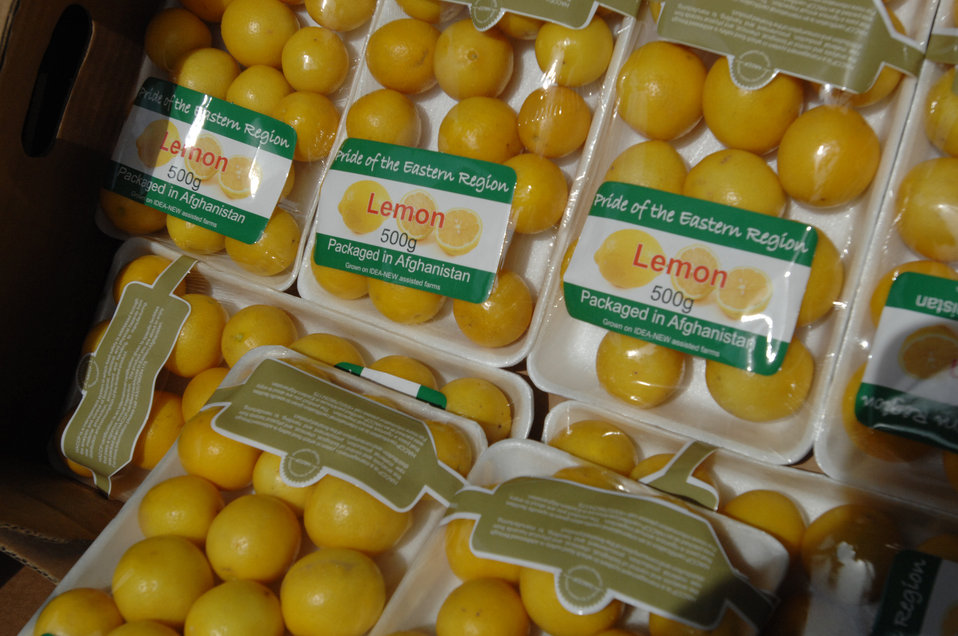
110209sv Shah288

Fruits and vegetables on display at the Surkh Rod vegetable packing facility in Surkh Rod, Nangarhar Province, on Wednesday, February 9, 2011. (S.K. Vemmer/Department of State)